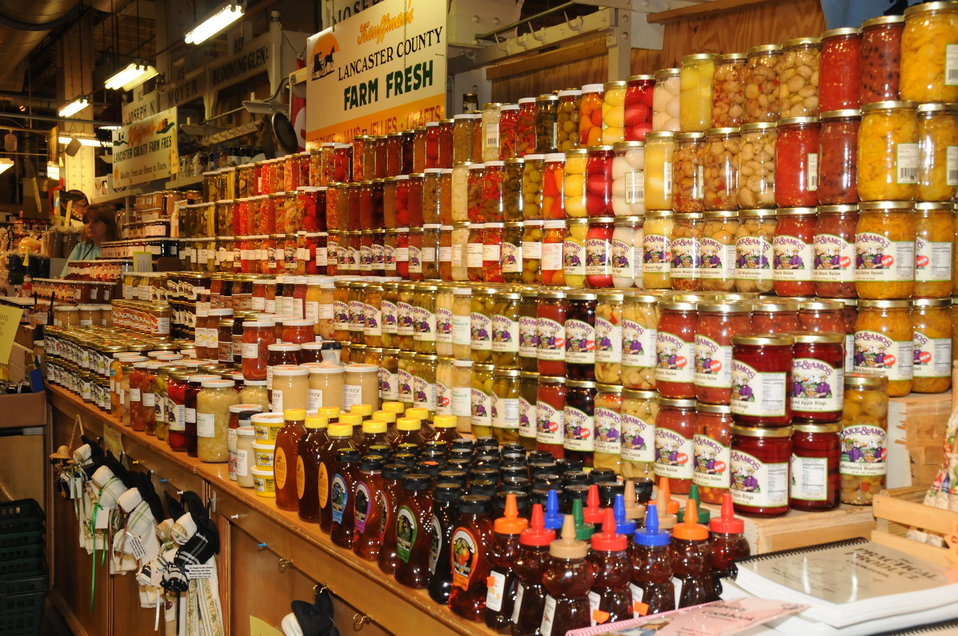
The Reading Terminal Market offers produce fresh from the field to the people of Philadelphia, PA on April 3, 2009. There are Amish specialties, fruits, vegetables, meats, seafood, and poultry. Reading Terminal Market opened for business in 1892 with approximately 78,000 square feet and almost 800 spaces for vendors. The Market was revitalized in the 1990’s and today is still the gastronomic bazaar that its original planners had envisioned. Many of the historic Market stands survived the reconstruction and are once again filled with local produce, fresh eggs, milk, meats, poultry, seafood, handmade crafts, jewelry, and clothing. The Market is home to more than 80 merchants, two of whom are descendants of the original stand holders from a century before.